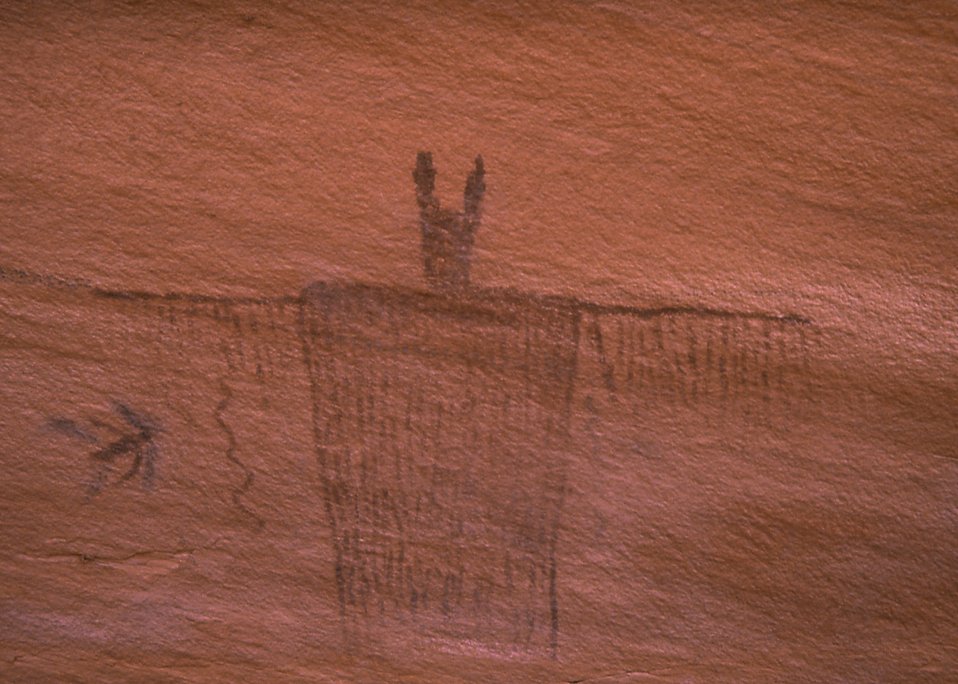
Petrograph